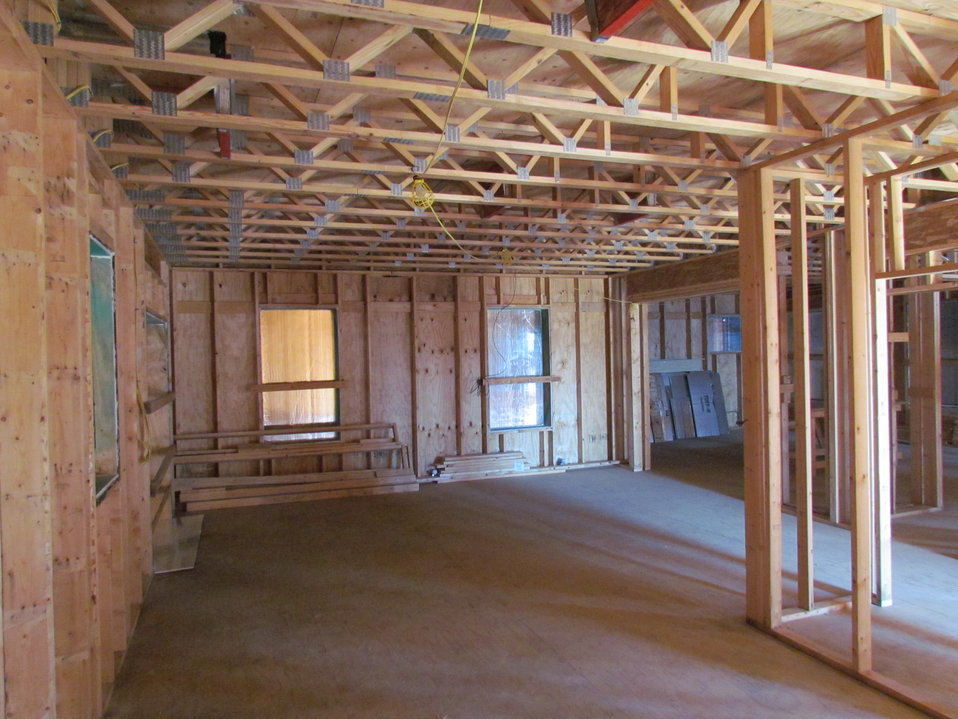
Net-Zero Energy Residential Test Facility - Interior photo of first floor of facility.